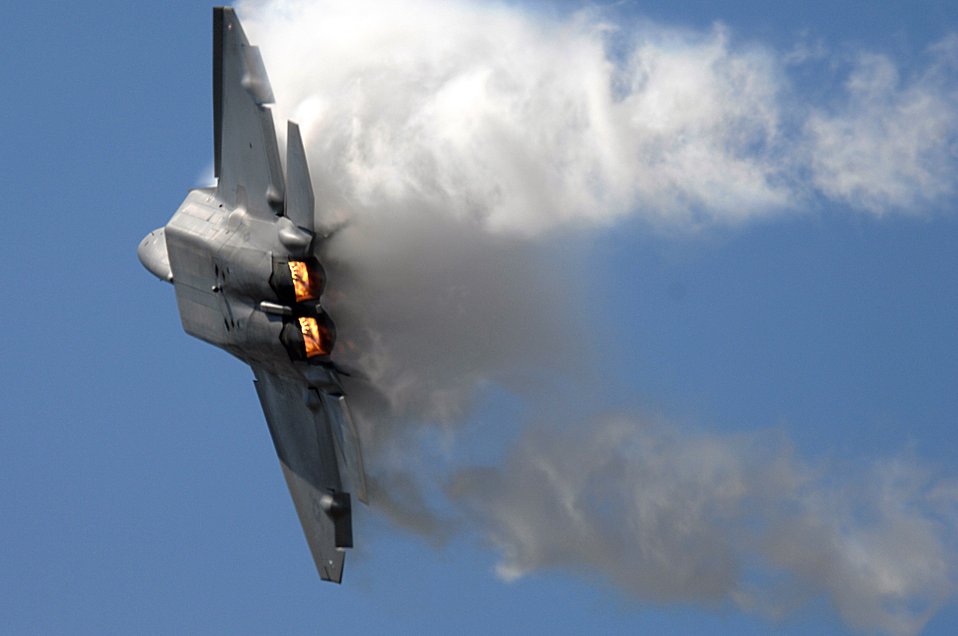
Kicking in the afterburner

An F-22 Raptor performs for thousands during an April 1 air show at Naval Base Ventura County in Point Mugu, Calif. The F-22's aero design, advanced flight controls, thrust vectoring and high thrust-to-weight ratio allows it to outmaneuver its adversaries.